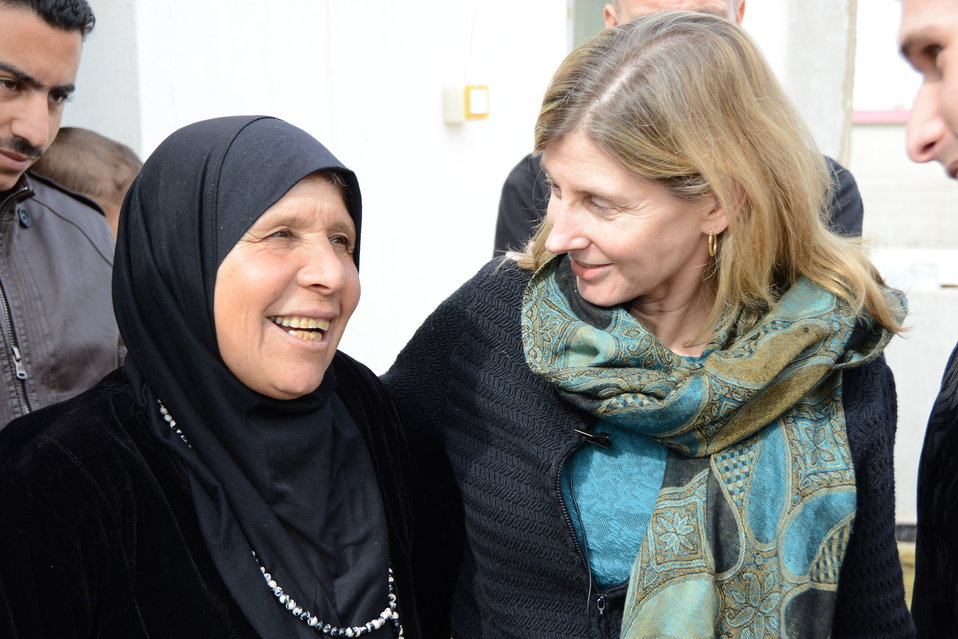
USAID Assistant Administrator Lindborg Interacts With a Syrian Refugee

USAID Assistant Administrator for Democracy, Conflict, and Humanitarian Assistance Nancy Lindborg interacts with a Syrian refugee in Jordan on January 28, 2013.